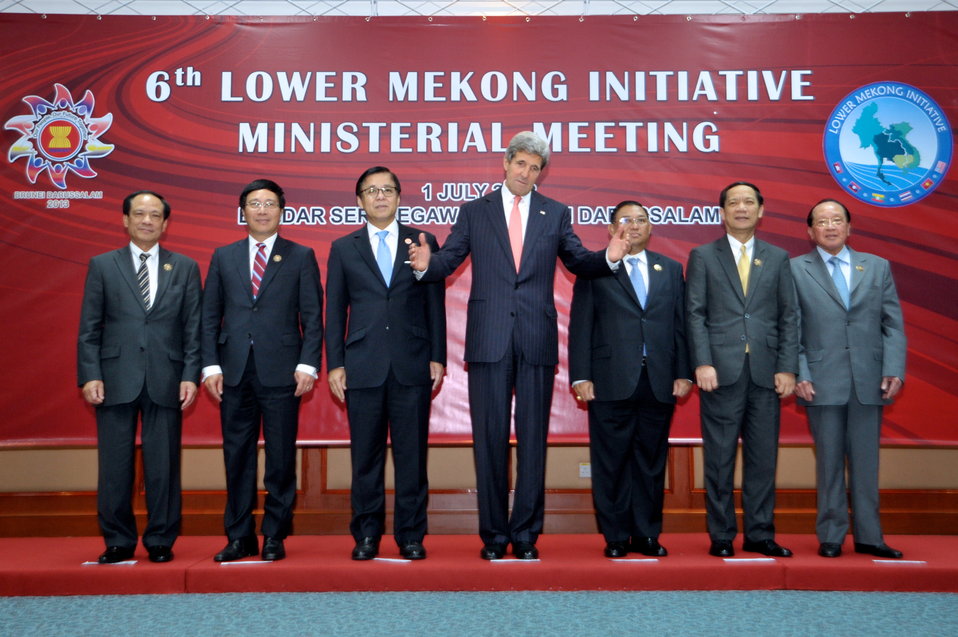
Secretary Kerry Hosts Mekong River Meeting

U.S. Secretary of State John Kerry calls for an end to photographs as he finishes posing with other members of the Lower Mekong Initiative before a U.S.-led meeting amid the ASEAN ministerial gathering in Bandar Seri Begawan, Brunei, on July 1, 2013.